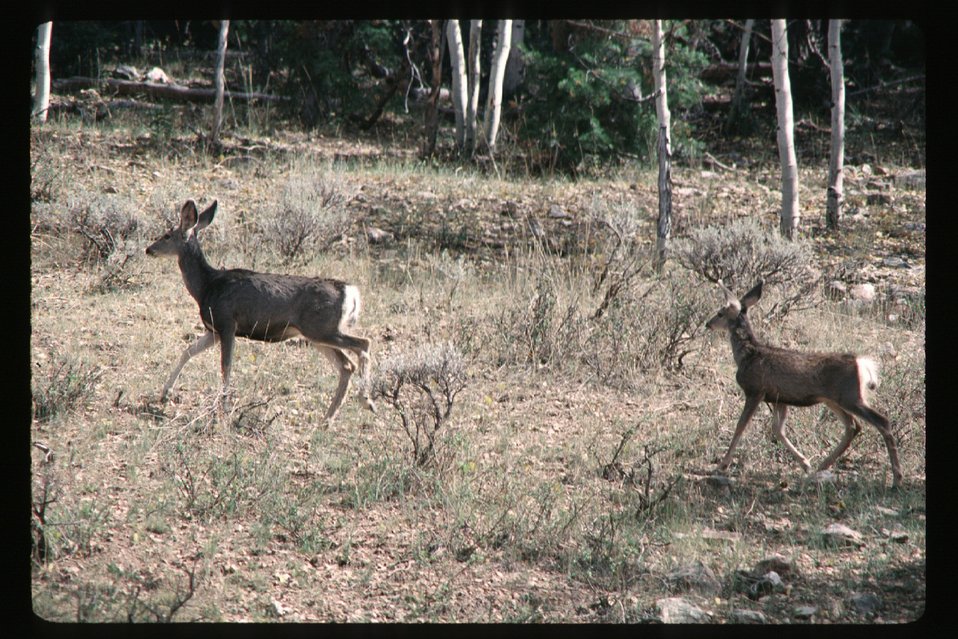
Deer Wildlife LSRD Lower Snake River District